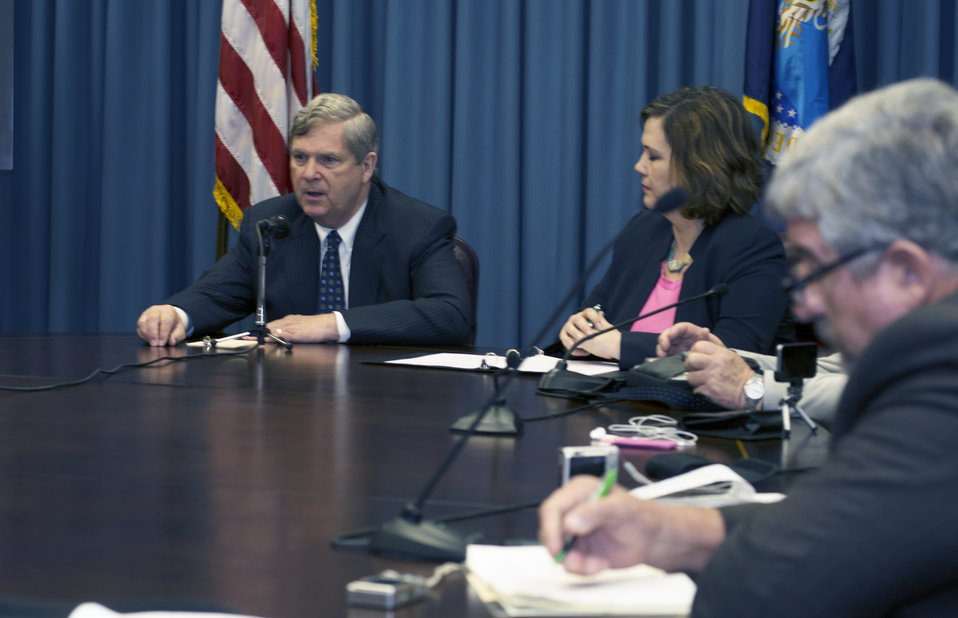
Agriculture Secretary Tom Vilsack meets with the National Association of Farm Broadcasters (NAFB) in the Williamsburg Room, Whitten Building, U.S. Department of Agriculture (USDA) in Washington, DC, on Tuesday, May 6, 2014.